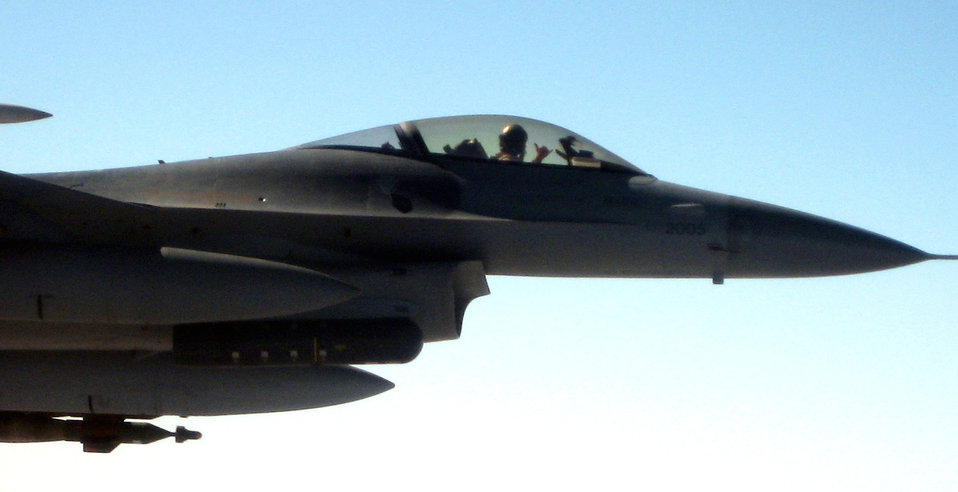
Refueling the fight

An F-16 Fighting Falcon pilot from Balad Air Base, Iraq, offers the hang loose sign before receiving fuel over Iraq from a KC-10 Extender assigned to the 380th Air Expeditionary Wing Nov. 20. The KC-10 refueled two jets that afternoon in support of Operation Iraqi Freedom.